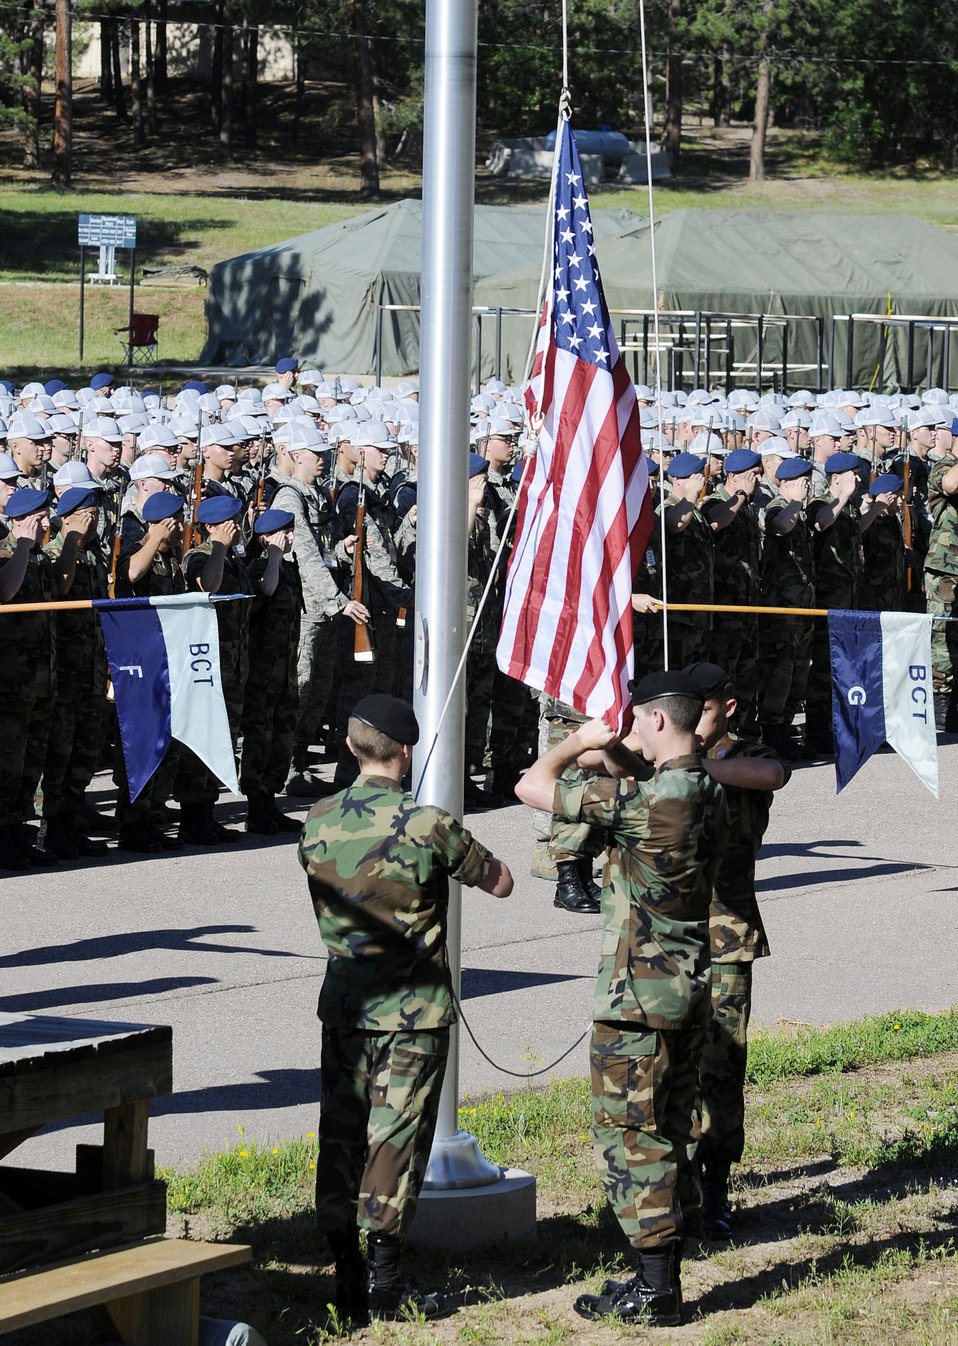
New cadets discover Jacks Valley

More than 1,300 U.S. Air Force Academy basic cadets observe opening ceremonies for the march to the field training segment of their basic training July 13 at Jacks Valley near Colorado Springs, Colo.